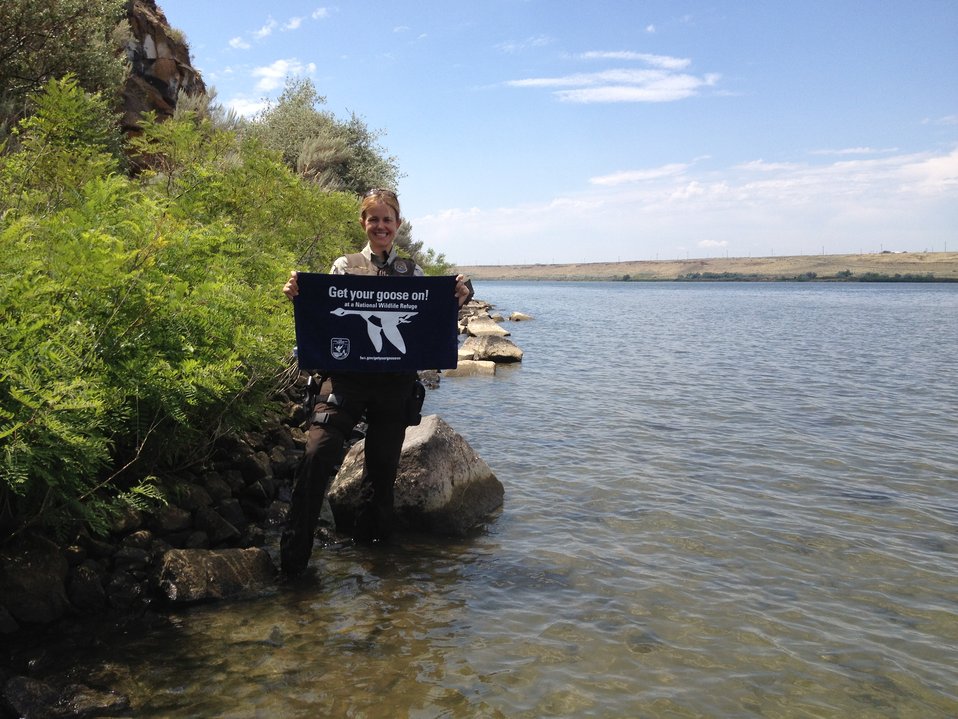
Get Your Goose On! - Columbia River Style

Rebecca Merritt, LEO, along the Columbia River in Umatilla National Wildlife Refuge, OR.